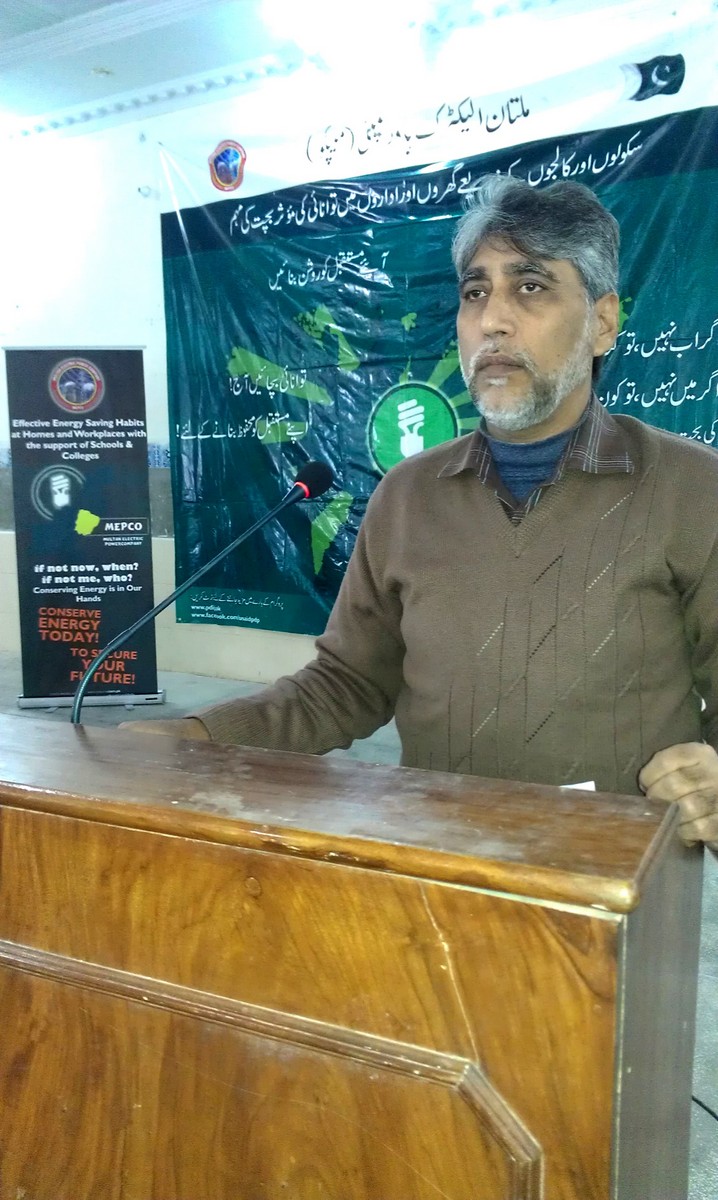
USAID Power Distribution Program-Energy Conservation Seminar at Govt. Comprehensive Girls Higher Secondary School, Multan.

Khawaja Aurangzeb (Additional Director Procurement), sharing the reasons of electricity shortfalls & various simple methods to conserve electricity .